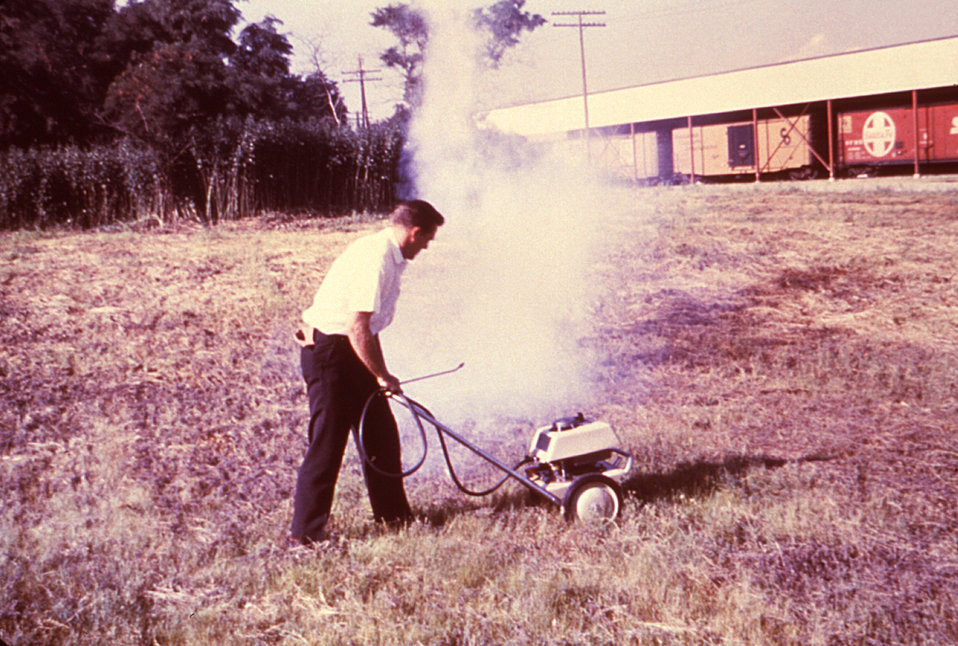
This 1981 photograph depicts the use of a thermal fog generator in order to control a population of potential mosquito disease vectors by disseminating an insecticide fog.